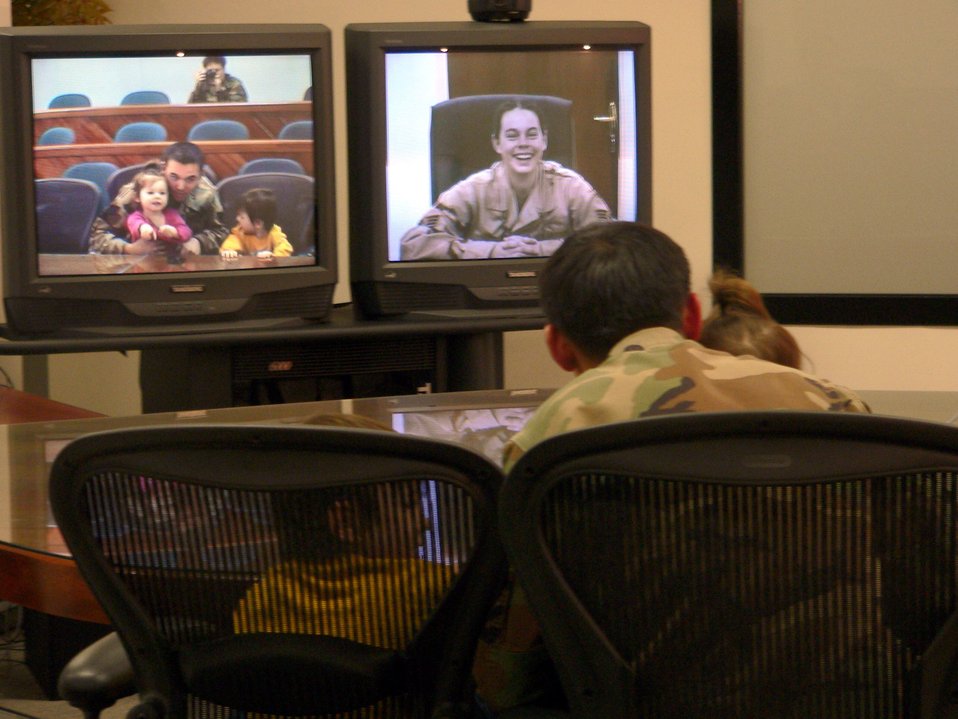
Video reunion

MISAWA AIR BASE, Japan (AFPN) -- Senior Airman April Ellis (on screen) talks to her husband, Staff Sgt. Christopher Ellis; her son, Christian; and her daughter, Faith, during a morale video teleconference call Dec. 13. Airman Ellis is deployed to Balad Air Base, Iraq. The Ellis's are with the 35th Maintenance Squadron here.